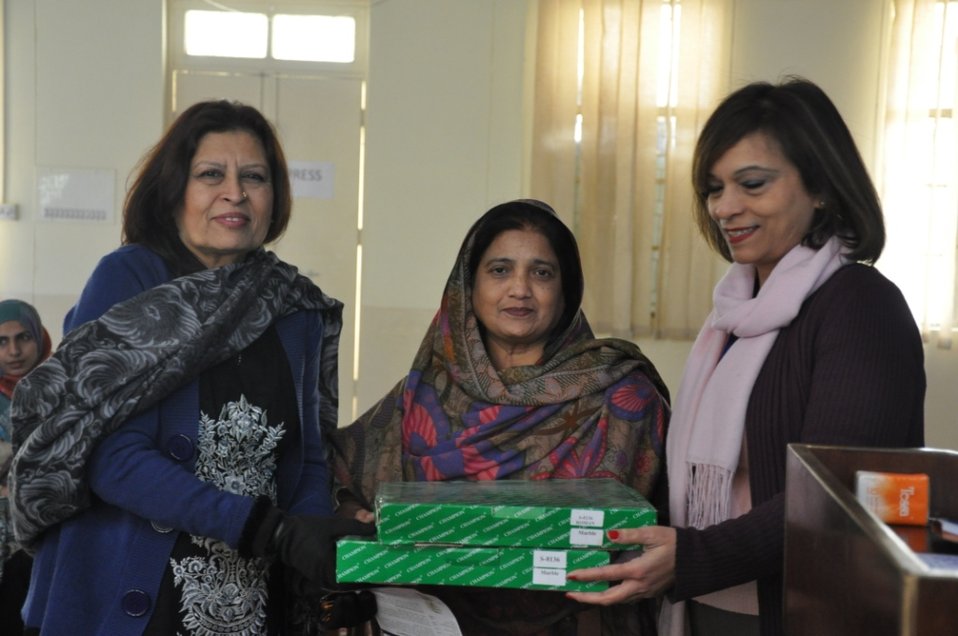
Effective Energy Saving Habits Campaign

Islamabad, January 31, 2012 - The USAID Power Distribution Program, under its Gender Strategy, held an informative talk at Islamabad Model College for Girls, F-6/2 and F-7/2, with the support of female representatives from IESCO. The agenda of the talk was to:
• Inform students about the USAID Power Distribution Program and the role of DISOCs in Pakistan.
• Educate students and teachers about the effective energy saving methods they can apply at homes, schools and work places.
• Enlighten female students about their workplace rights and inform them about various employment opportunities in the power sector.